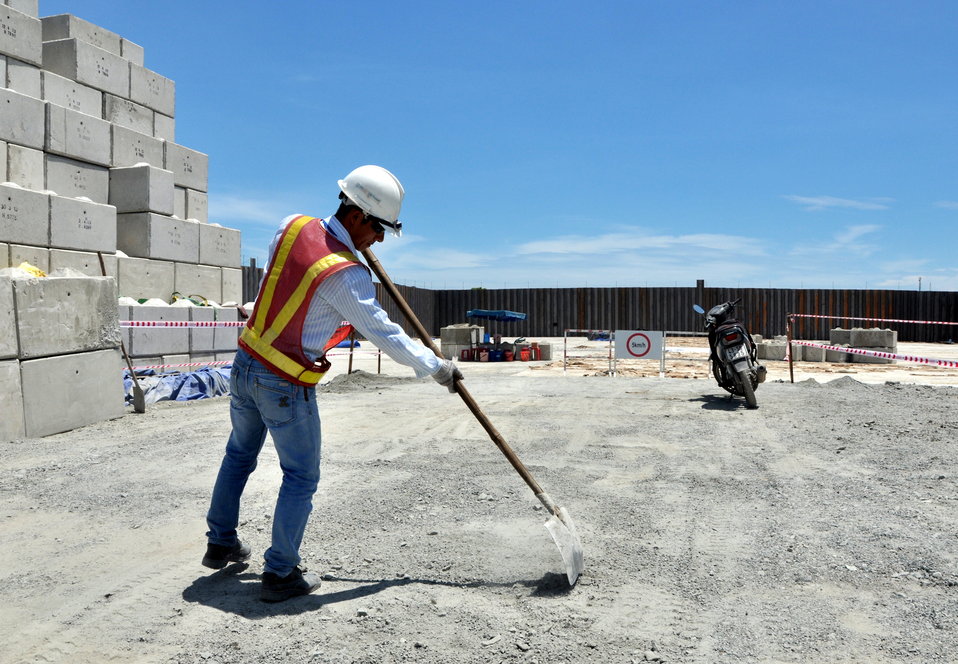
Environmental Remediation Progress at the Danang Airport site

Progress at the Remediation of Dioxin Contamination Project Site

Danang, Vietnam, June 5, 2013